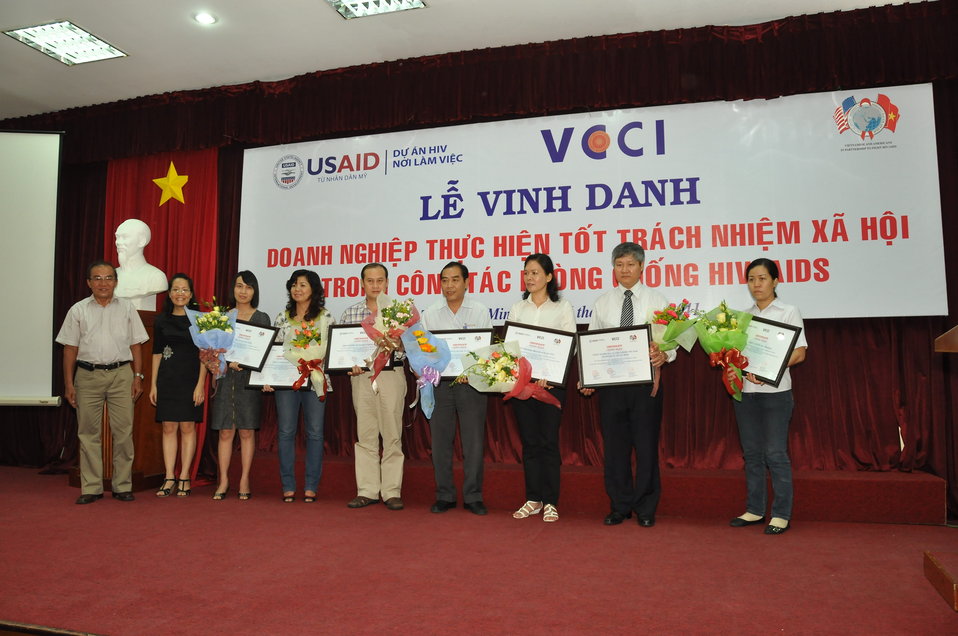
USAID and VCCI present certificates to enterprises active in HIV awareness and support1)

Award ceremony in Ho Chi Minh City on November 16, 2011